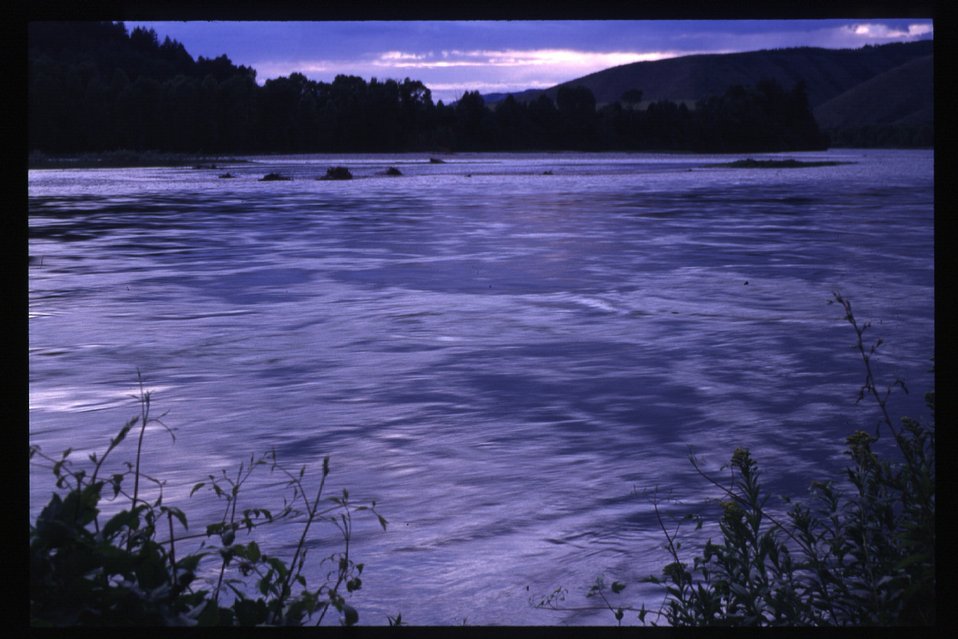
South Snake River Cress Creek Trail Overlook Recreation Scenic Biker Shoshone Field Office USRD Upper Snake River District